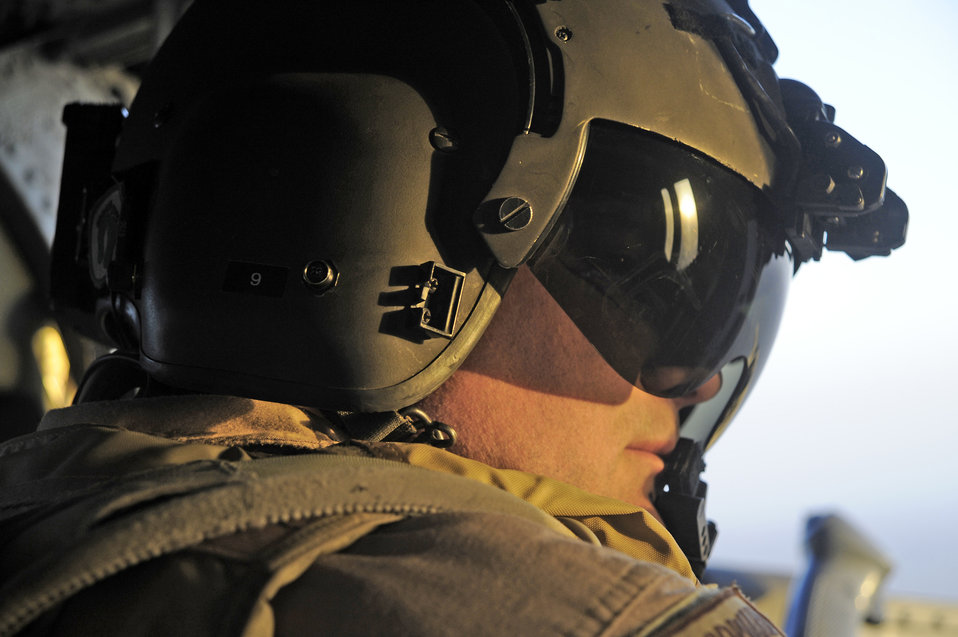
Flight engineers: Critical component to combat search, rescue mission

Tech. Sgt. Brock Woodward provides security during combat operations June 23 above the Hemland Province, Afghanistan. Sergeant Woodward is a flight engineer with the 129th Expeditionary Rescue Squadron.